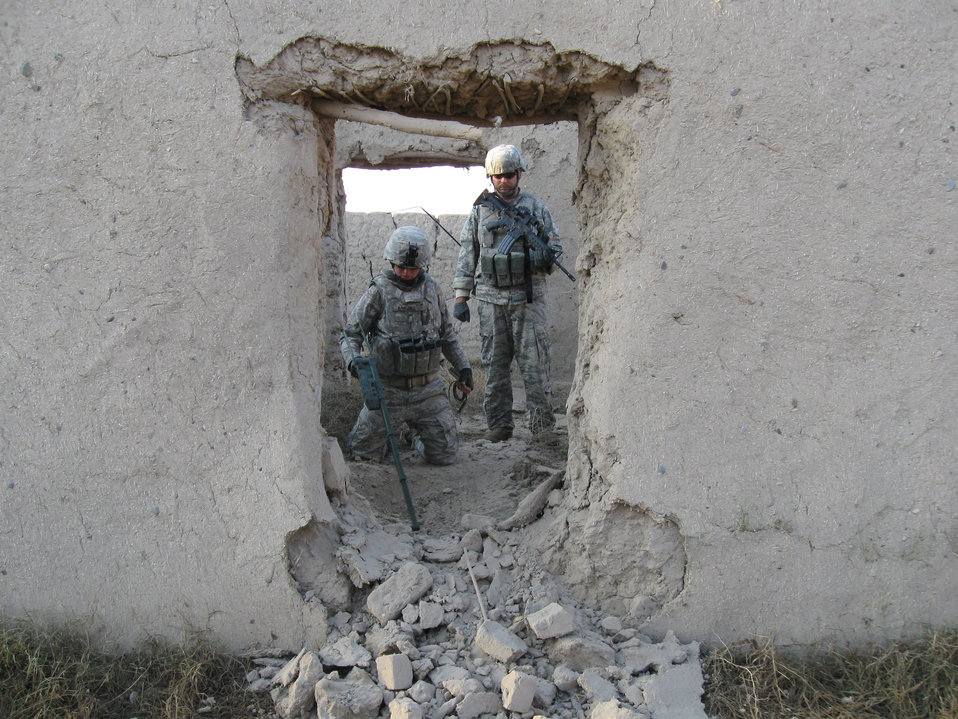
The women of explosive ordnance disposal

Staff Sgt. Amber Hanlon patrols the area during a deployment to Afghanistan. Sergeant Hanlon is an explosive ordnance disposal technician at the 88th Air Base Wing at Wright-Patterson Air Force Base, Ohio.